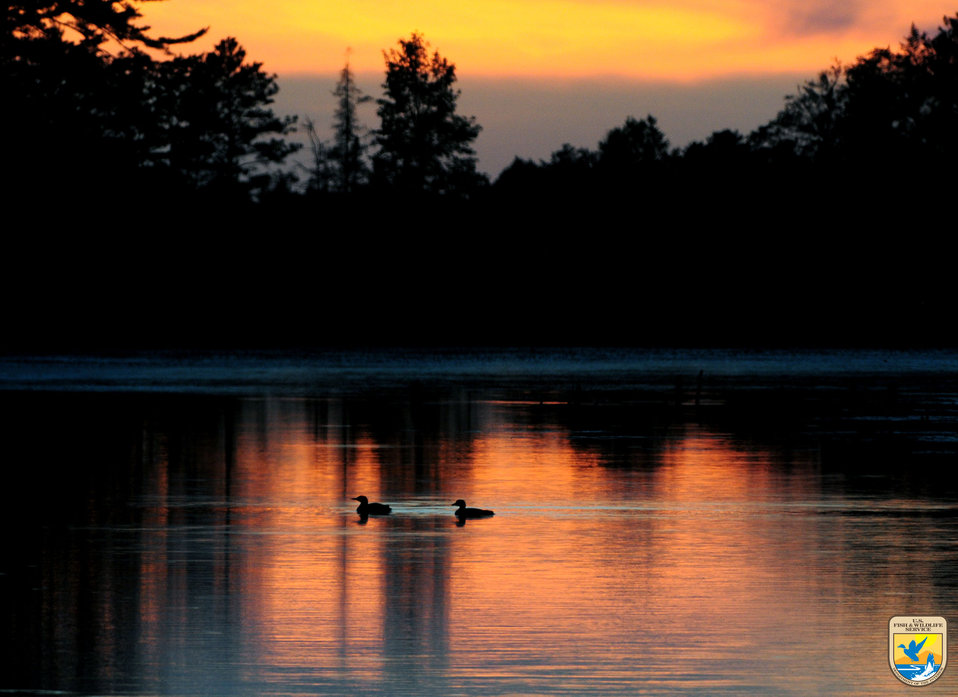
Waterfowl - Region 3

Waterfowl at sunset on Seney National Wildlife Refuge in Michigan